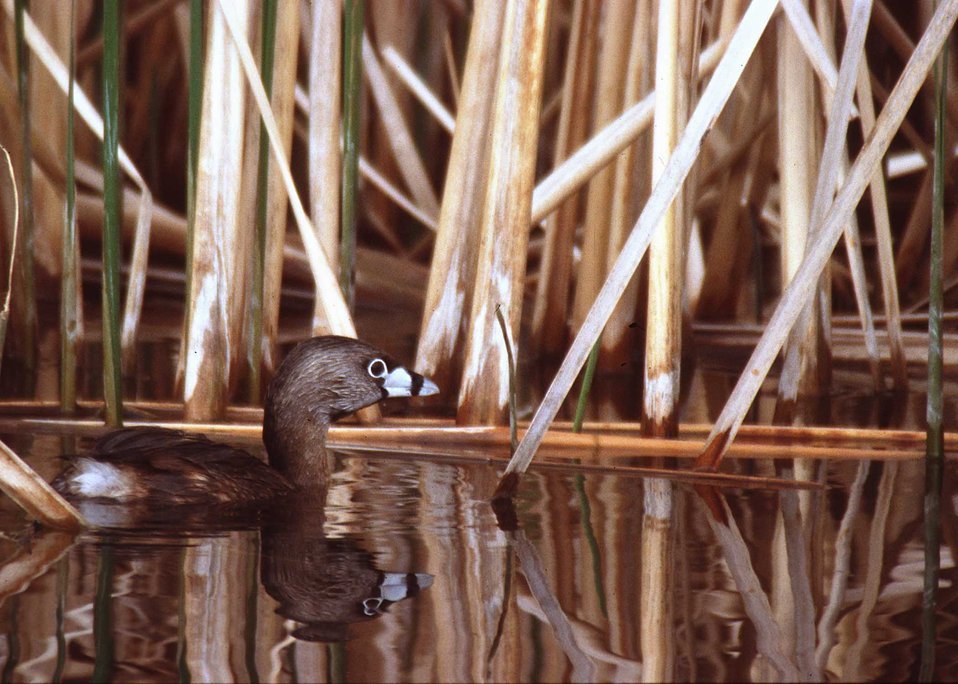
Pied bill grebe in a pothole wetland.